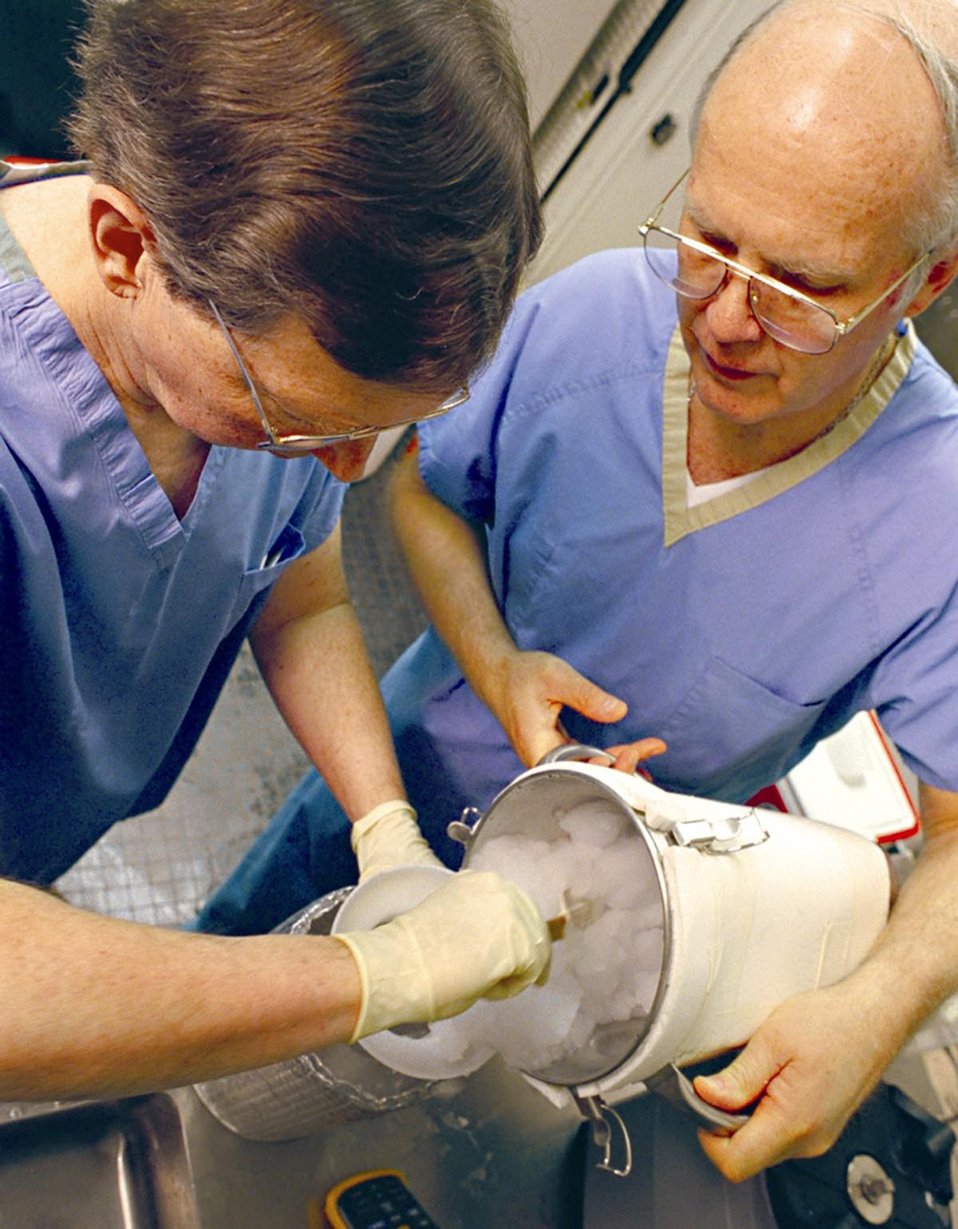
ARGONNE ENGINEERS PREPARE A BATCH OF ICE SLURRY FOR BRAIN COOLING TEST.

THIS ARGONNE TECHNOLOGY IS BEING DEVELOPED IN THE HOPE OF DECREASING THE DEVASTATING EFFECTS OF SUDDEN CARDIAC ARREST. ICE SLURRY IS AN EQUAL MIX OF MINUSCULE ICE PARTICLES AND SEA WATER. IN THIS PROCEDURE SLURRY WOULD BE INSERTED INTO THE LUNGS TO COOL THE SURROUNDING BLOOD, WHICH WITH CHEST COMPRESSIONS WOULD BE MADE TO CIRCULATE TO THE BRAIN, COOLING IT, THEREBY PRESERVING BRAIN CELLS.